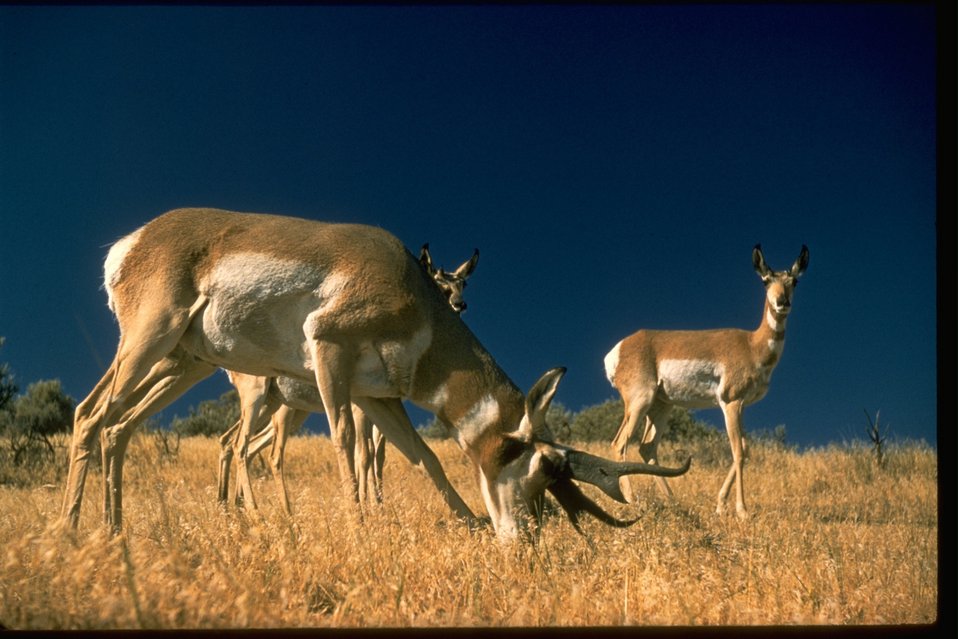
Pronghorns (sometimes called Prong horn Antelope) standing in field.